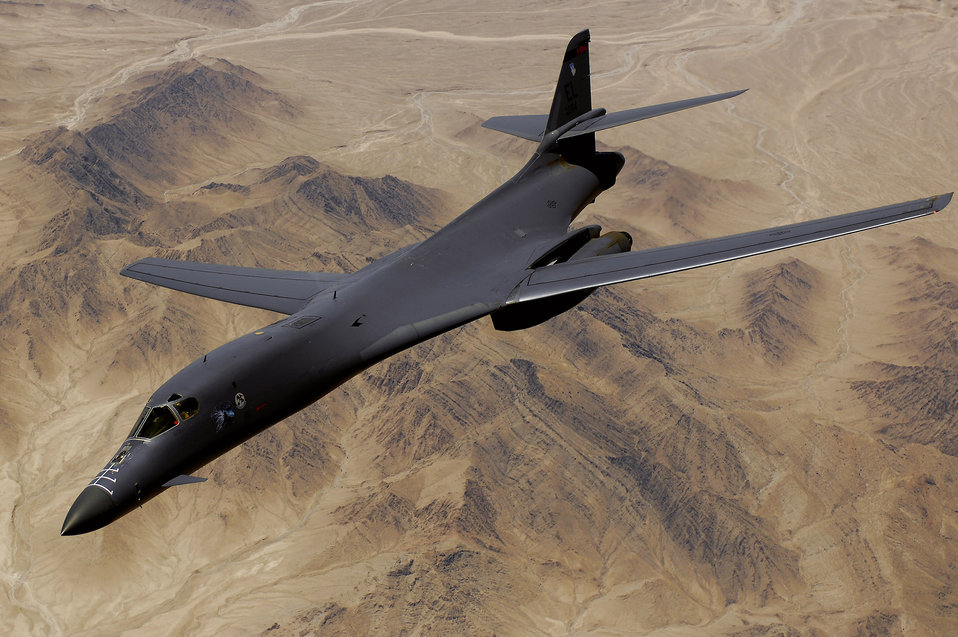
June 9 airpower summary: B-1B bombs enemy

An Air Force B-1B Lancer aircraft moves out of position after receiving fuel from a KC-135R Stratotanker during a mission over Afghanistan.